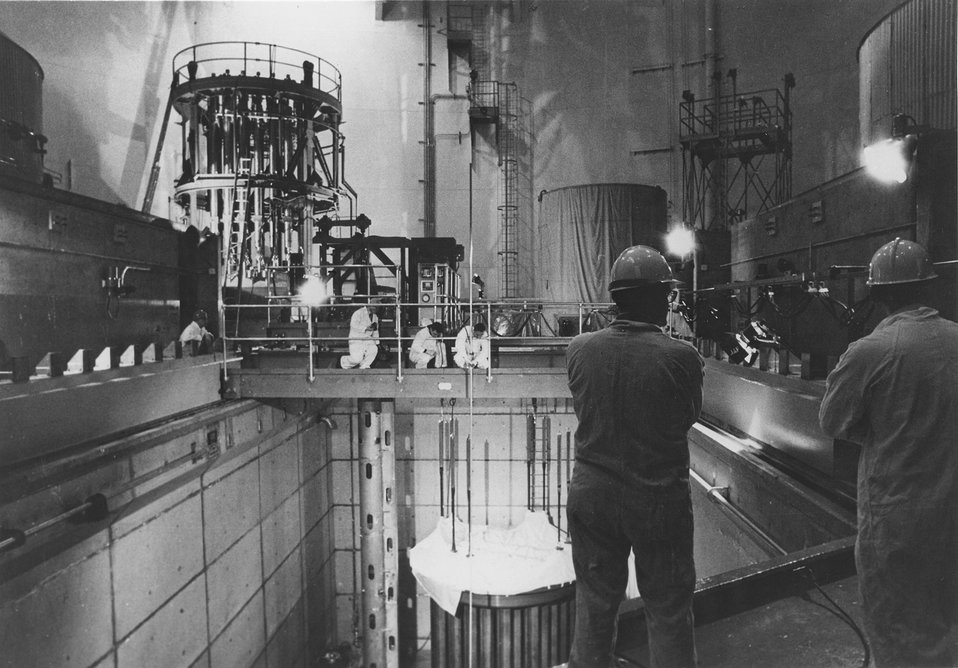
First fuel loading at the Consumer Power Company of Michigan's Palisades Plant Unit 1. c. 1974